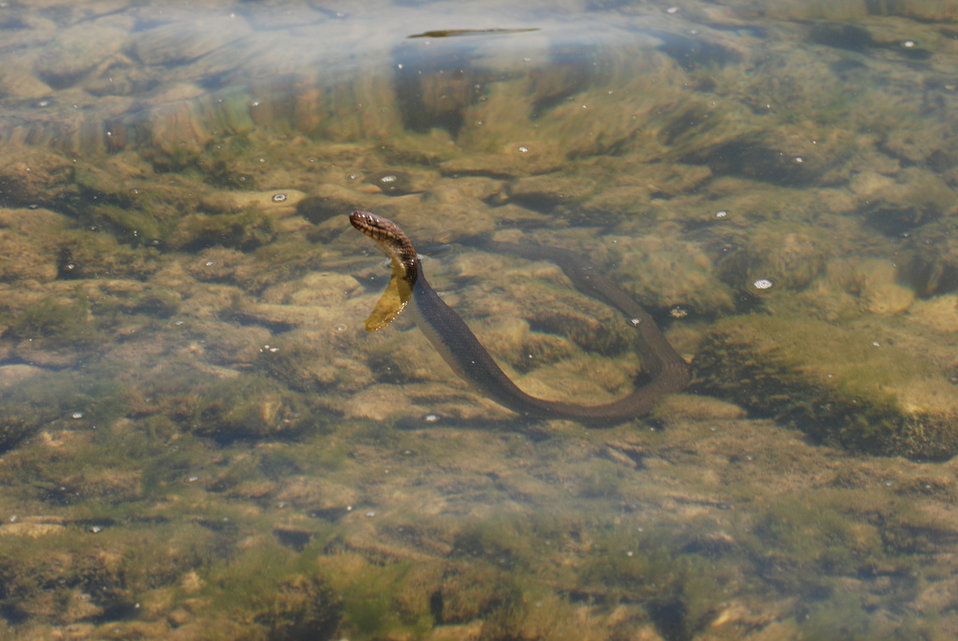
Recovered Lake Erie watersnake (Nerodia sipedon insularum)